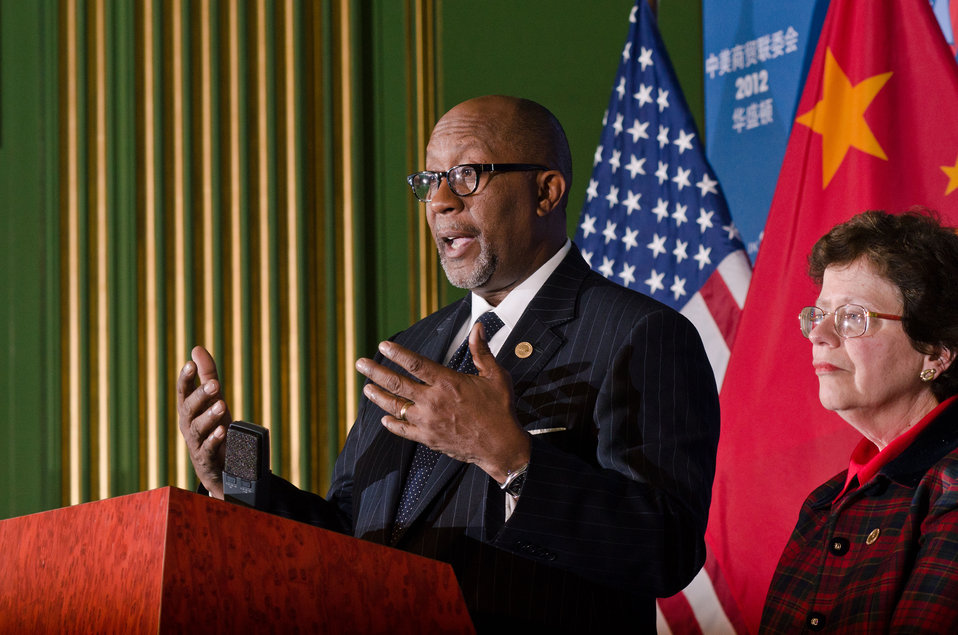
U.S. Trade Representative Ron Kirk and Acting U. S. Commerce Secretary Rebecca Blank listen and respond to questions from international news media journalists at the 23rd Session of the U.S. China Joint Commission on Commerce and Trade (JCCT) at the Andrew W. Mellon Auditorium in Washington, D.C. on Wednesday, Dec. 19, 2012. The JCCT holds high-level plenary meetings on an annual basis to review progress made by working groups that focus on a wide variety of trade issues. These working groups meet throughout the year to address topics such as intellectual property rights, agriculture, pharmaceuticals and medical devices, information technology, tourism, commercial law, environment, and statistics.